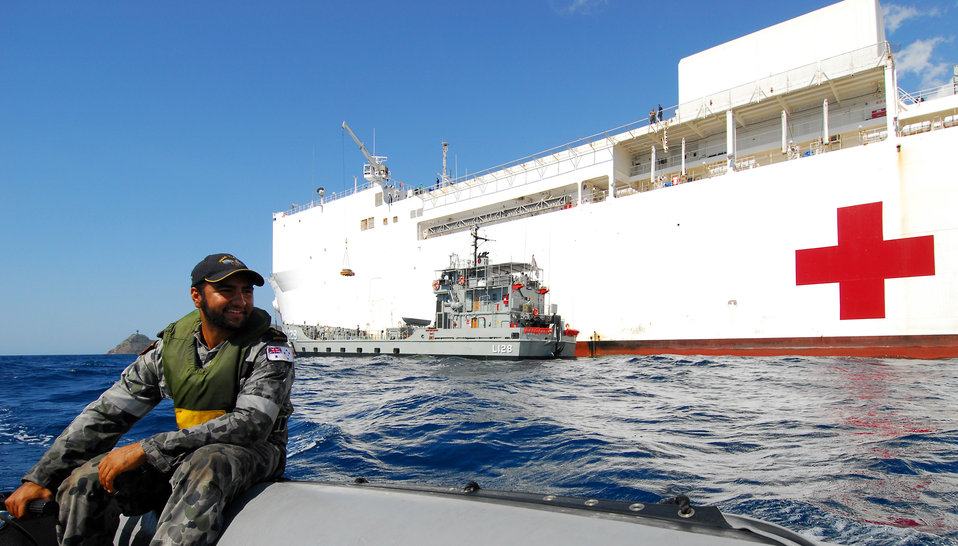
Royal Australian Navy Able Seaman Marine Technician Mead Operates a Zodiac

Royal Australian Navy Able Seaman Marine Technician Joey Mead operates a zodiac as the Military Sealift Command hospital ship USNS Mercy (T-AH 19) transfers cargo aboard the Royal Australian Navy Heavy Landing Craft, HMAS Labuan (L128) on August 11, 2010. Both are anchored near Timor-Leste in support of Pacific Partnership 2010 (PP10). PP10 is the fifth in a series of annual U.S. Pacific Fleet humanitarian and civic assistance endeavors to strengthen regional partnerships.